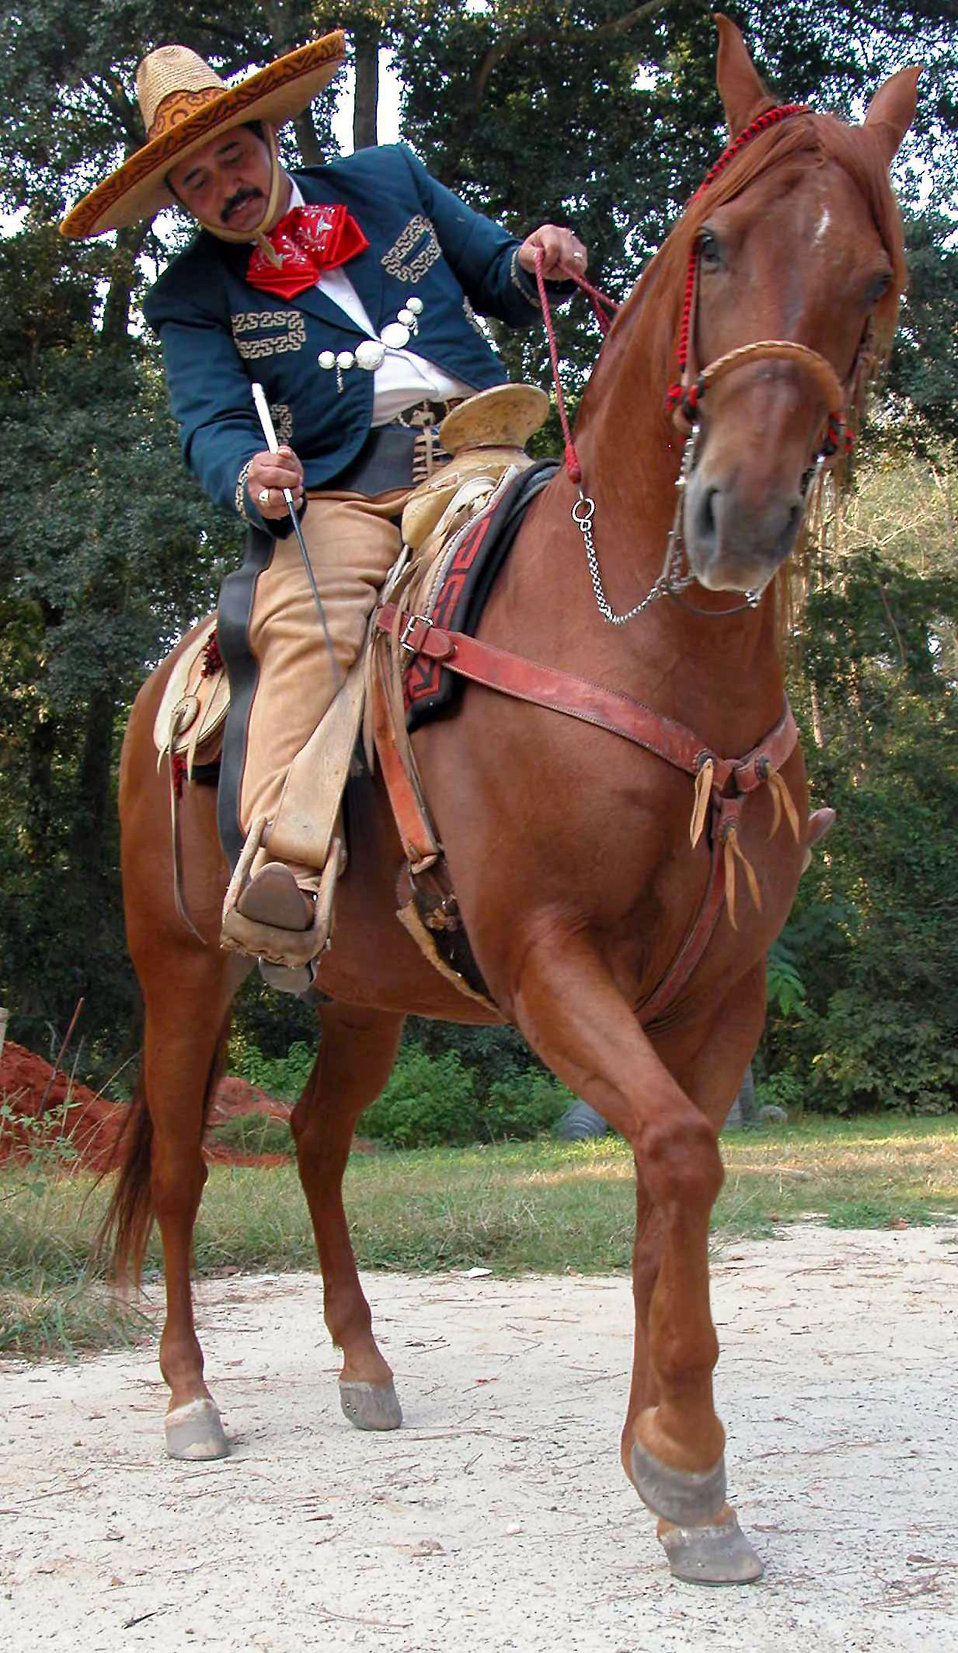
A horse of course

ROBINS AIR FORCE BASE, Ga. -- Louie Barrientes uses a riding crop to prompt his horse, Regalo, to dance. He has also taught the horse to spin, shake hands and count by stomping his left front hoof. He can say hello by raising his front right hoof, throw kisses and even answer simple